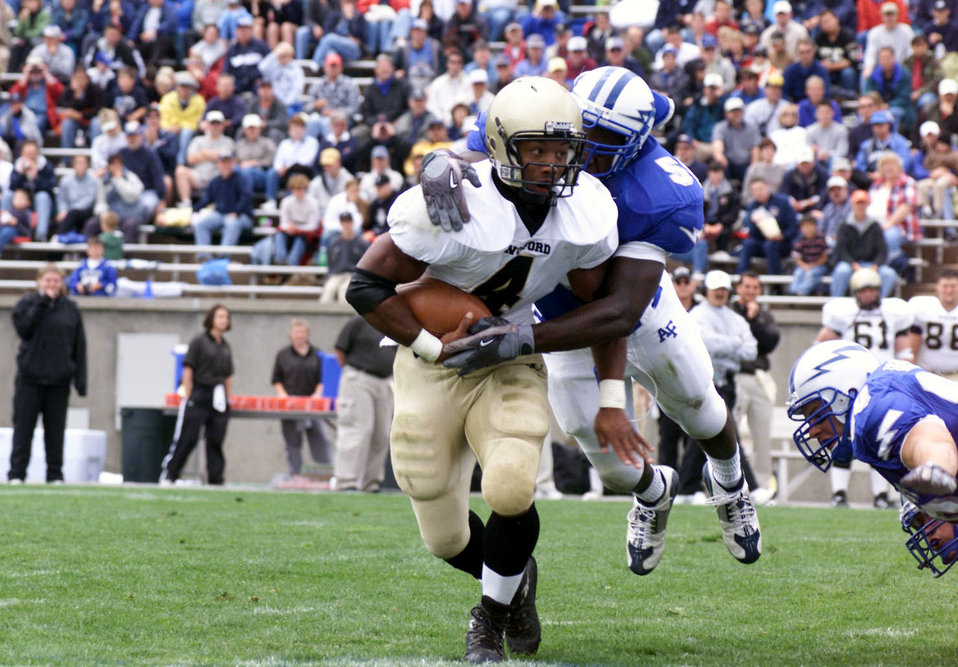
Air assault

U.S. AIR FORCE ACADEMY, Colo. -- Air Force Academy Falcon linebacker Marchello Graddy goes airborne to wrap up Wofford fullback J.R. McNair. The Falcons shut out Wofford, 49-0, during the teams' Aug. 30 game.